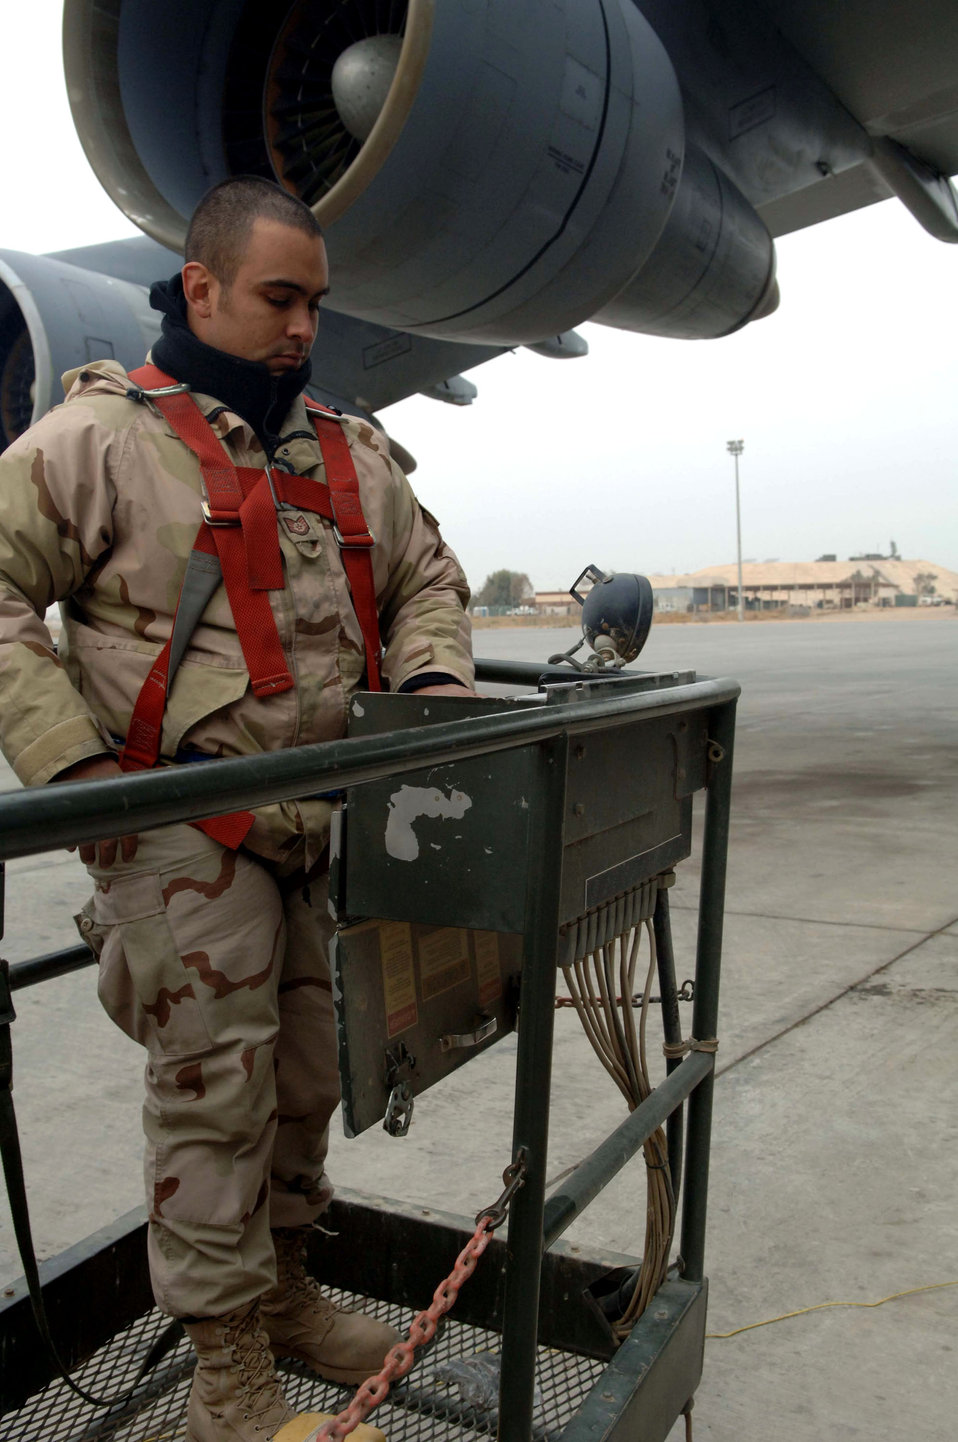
A 'galaxy' far,far away

Staff Sgt. Roger Vasquez operates a condor lift Jan. 1 at Balad Air Base, Iraq. The lift will be used to raise Sergeant Vasquez high enough to peer into the side panel of a C-5 Galaxy. The C-5 is approximately 65 feet high. Sergeant Vasquez is a 721st Air Mobility Operations Group crew chief deployed from Travis Air Force Base, Calif.